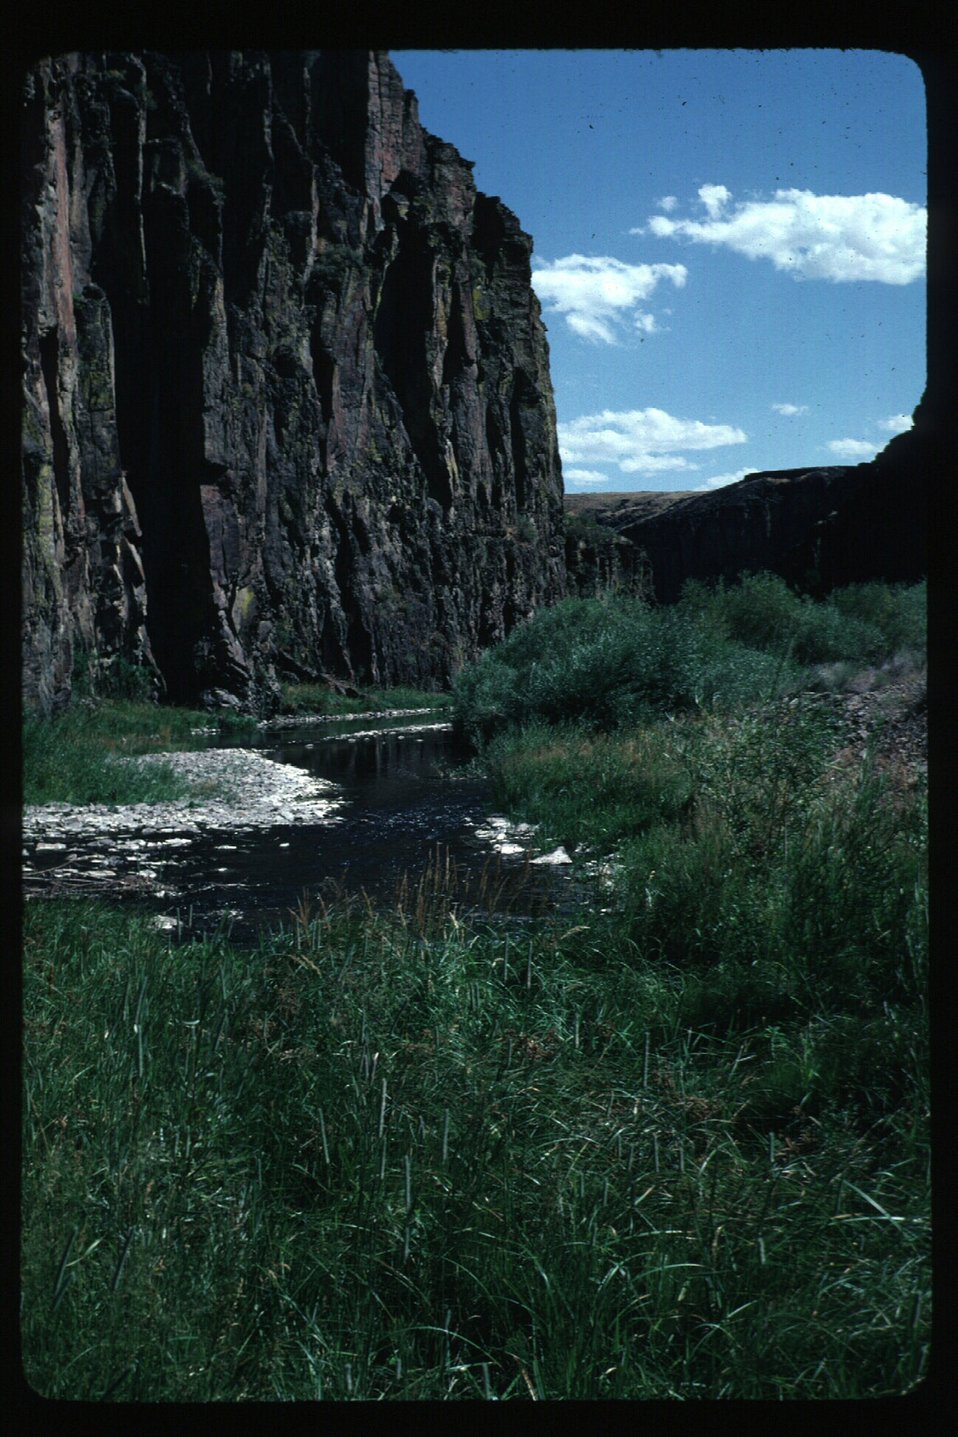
Scenic Battle Creek River overlook Owyhee Field Office LSRD Lower Snake River District